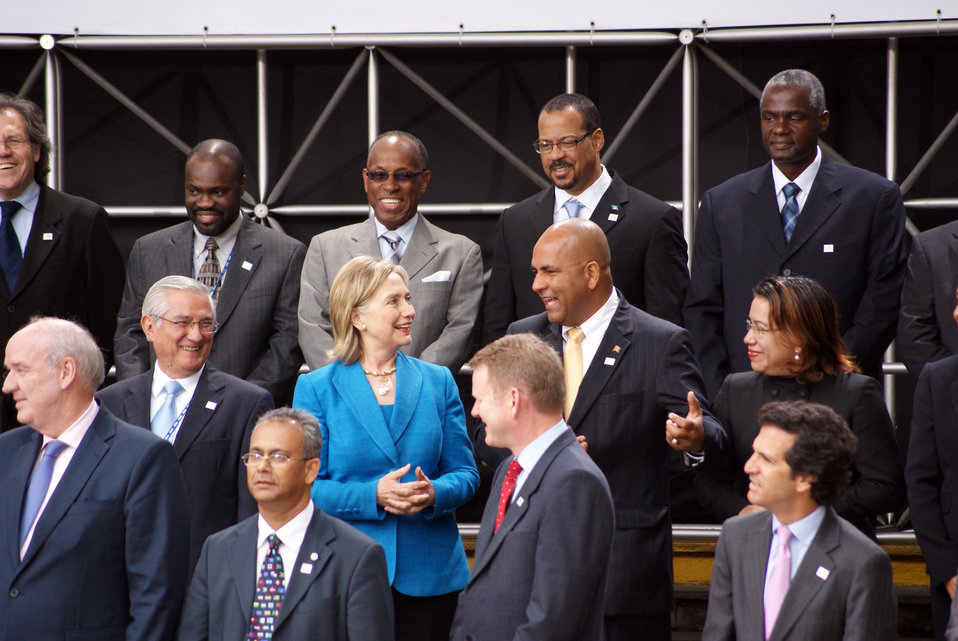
Secretary Clinton Attends 40th OAS Assembly Official Ministerial

U.S. Secretary of State Hillary Rodham Clinton poses with leaders during the 40th OAS Assembly Official Ministerial Photo in Lima, Peru June 7, 2010.